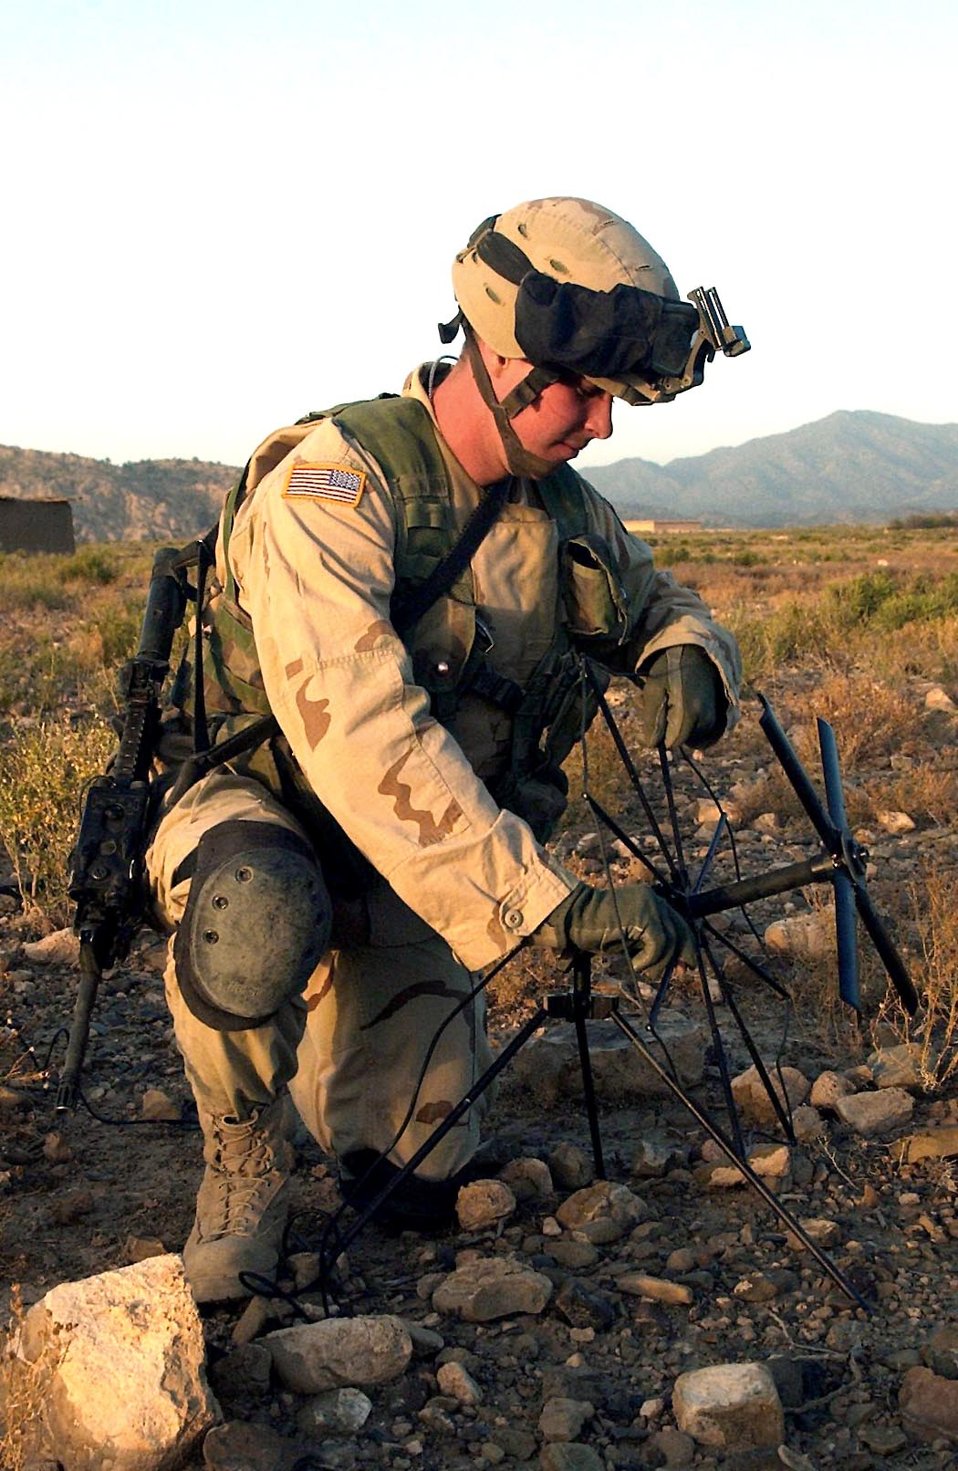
Pilant

SHKIN FIRE BASE, Afghanistan -- Airman 1st Class Justin Pilant sets up an antenna near here. Pilant will use the antenna to talk to pilots if he makes contact with the enemy. Pilant is deployed from the 20th Air Support Operations Squadron at Fort Drum, N.Y.